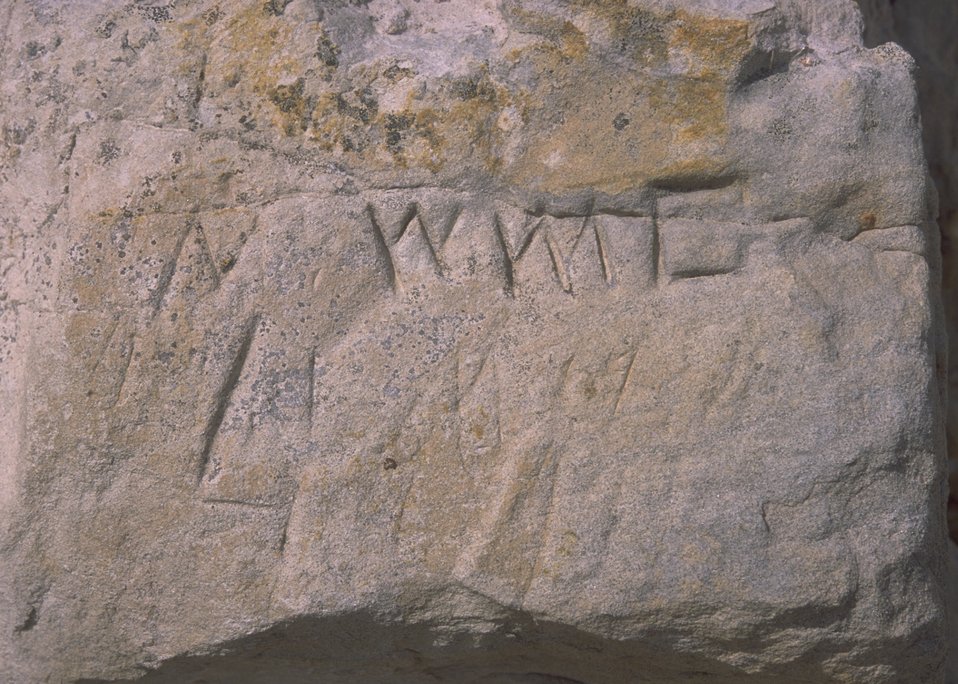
Initials carved into rock by pioneers at Rock Avenue, Oregon Trail, Casper Field Office.